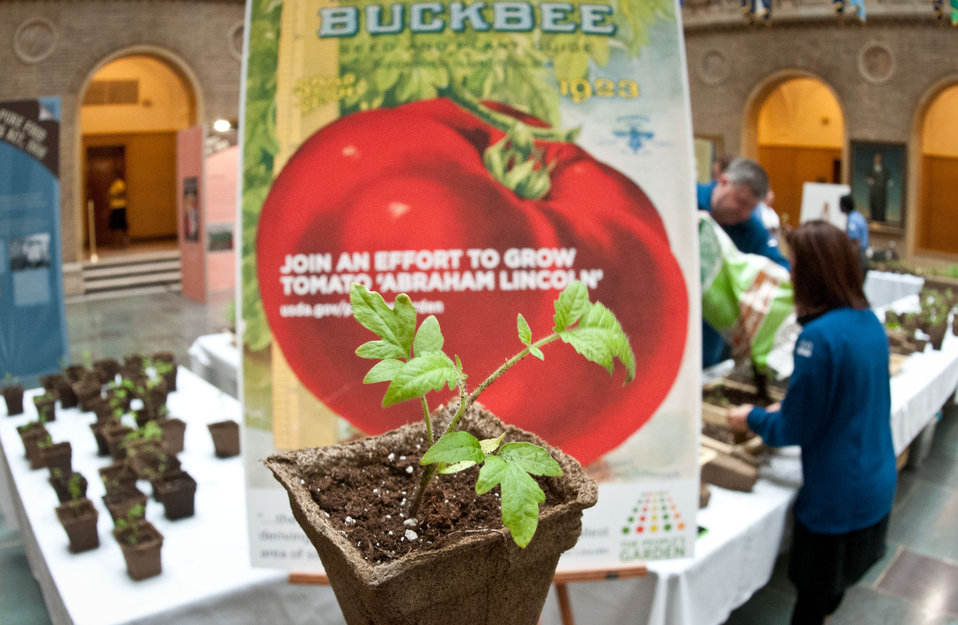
The People’s Garden Initiative and volunteer Executive Master Gardeners distributed ‘Abraham Lincoln” Tomato seedlings that the People’s Garden Initiative is distributing to USDA employees in celebration of the 150th Anniversary of the U.S. Department of Agriculture, on Tuesday, May 15, 2012 in Washington, D.C., on this day, 150 years ago, President Abraham signed the Department into existence during the Civil War. In 1923 the H.W. Buckbee seed company of Rockford, Illinois introduced an heirloom variety named in honor of Illinois’ Greatest Son – Abraham Lincoln. The plant produces large beefsteak tomatoes in about 90 days. Volunteer Executive Master Gardeners planted and cultivated more that 3,000 seedlings ranging in size from one inch to more than a foot tall, so people could choose the best ones to transport home and to stagger the harvest by selecting a small and large seedling. One of the hopes of this event is to share the joys of gardening and harvesting, as well as the opportunity to share your harvest in your community. Seed packets are being distributed to People’s Gardens worldwide.